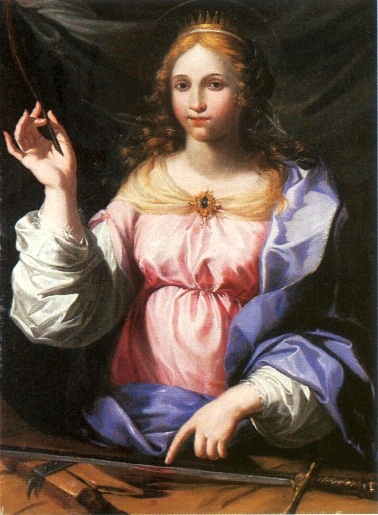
Pasinelli St. Catherine